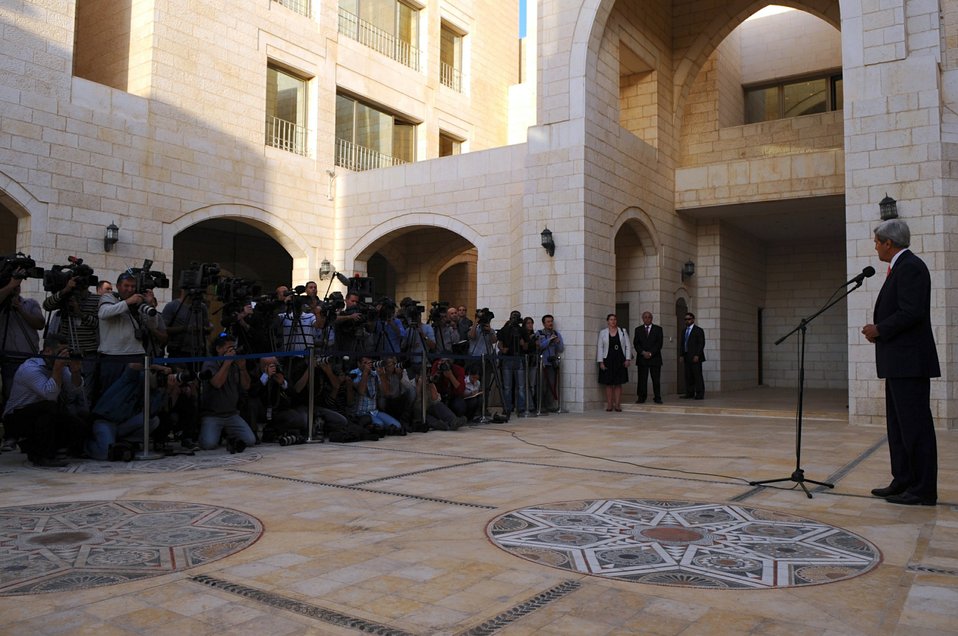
Secretary Kerry Addresses Reporters After Meeting With Palestinian President Abbas

U.S. Secretary of State John Kerry addresses reporters after meeting with Palestinian Authority President Mahmoud Abbas at the Authority's office in Bethlehem, West Bank, on November 6, 2013.